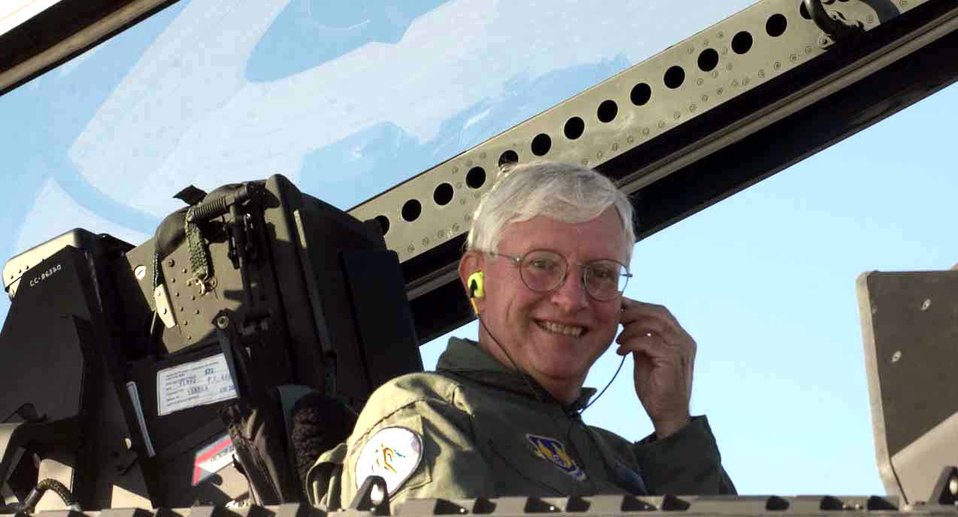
Airmen get ACCES to better communication

LANGLEY AIR FORCE BASE, Va. -- Hendrick Ruck demonstrates the wear of the attenuating customized communications earpiece system while sitting the cockpit of one of Langley's new F/A-22 Raptors. Mr. Ruck is director of the Air Force Research Laboratory's research team from Wright-Patterson Air Force Base, Ohio.